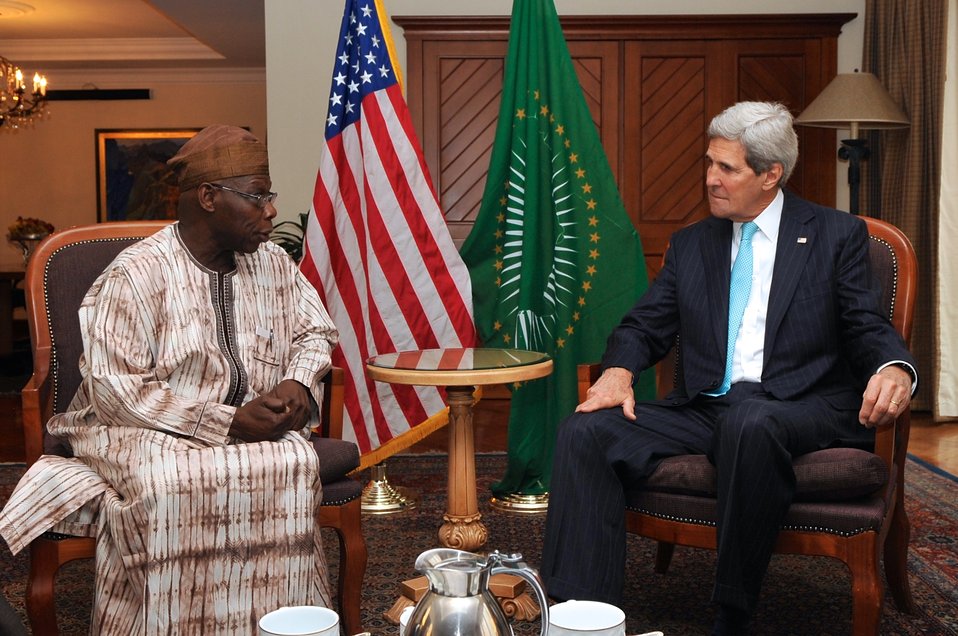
Secretary Kerry Discusses South Sudan With Former Nigerian President Obasanjo

U.S. Secretary of State John Kerry speaks with former Nigerian President Olusegun Obasanjo - now chairperson of the African Union's Commission of Inquiry - about the conflict in South Sudan during a meeting in Addis Ababa, Ethiopia, on May 2, 2014.